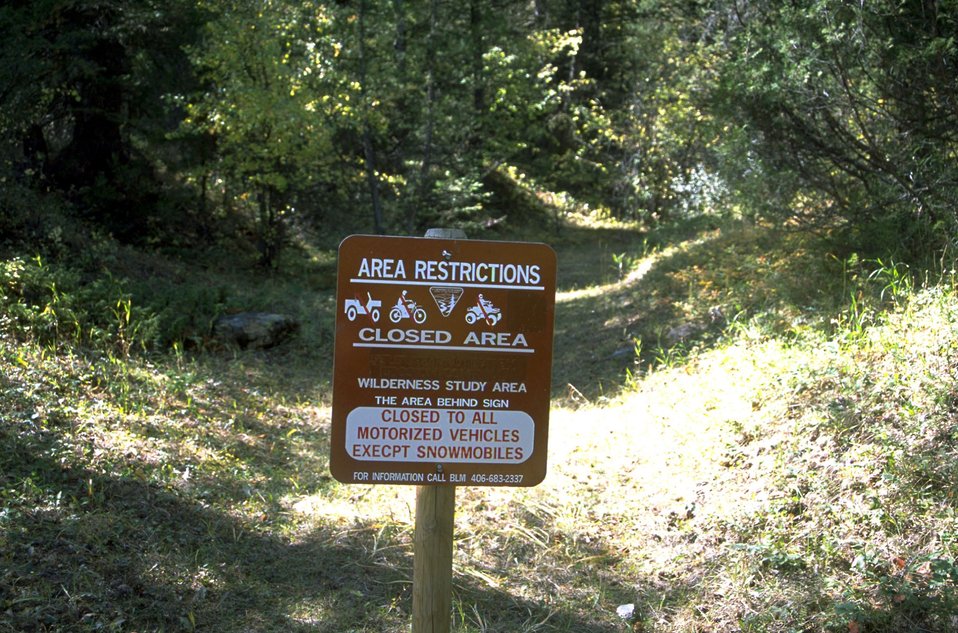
Mispelled No Motorized Travel Sign in the Axolotl Lakes Wilderness Study Area